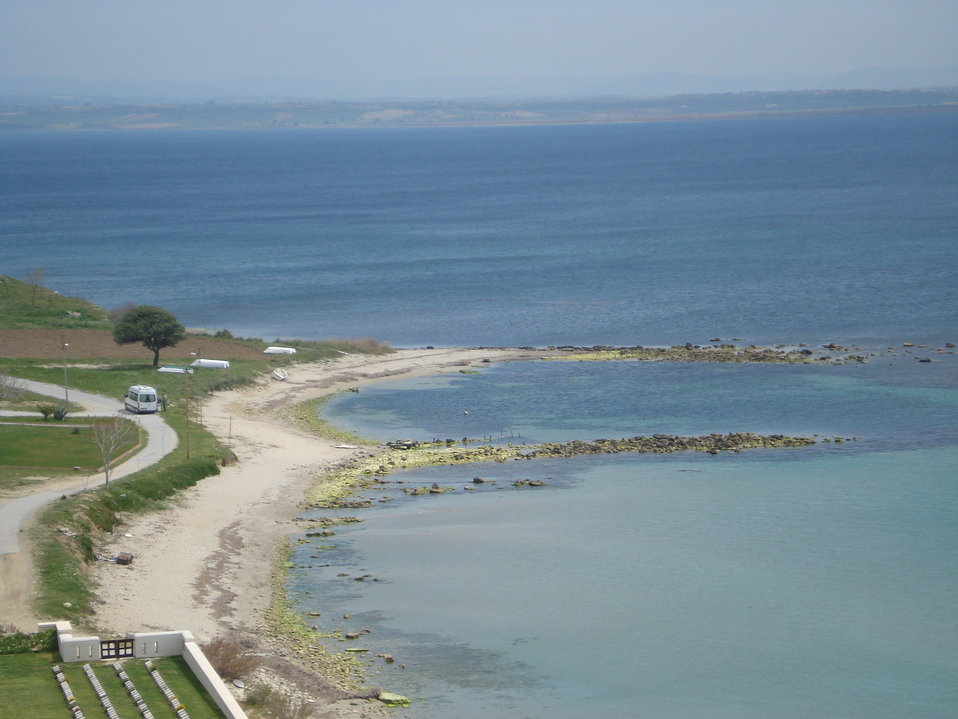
A bay of the Dardanelles. Türkçe: Çanakkale Boğazı'nın koylarından biri.